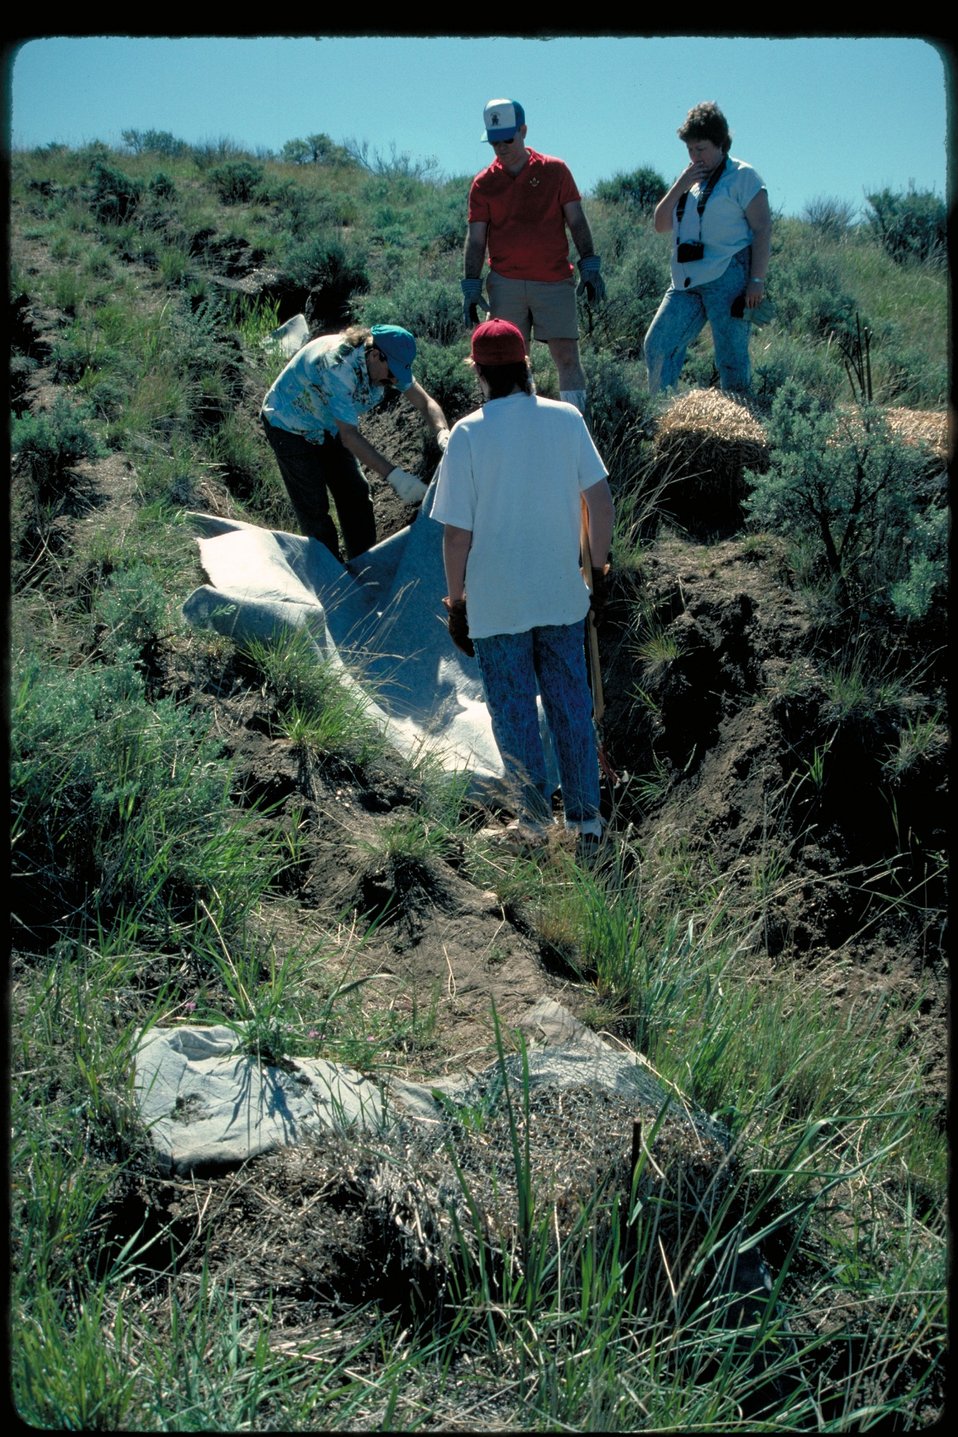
Boise Front volunteer project Four Rivers Field Office LSRD Lower Snake River District